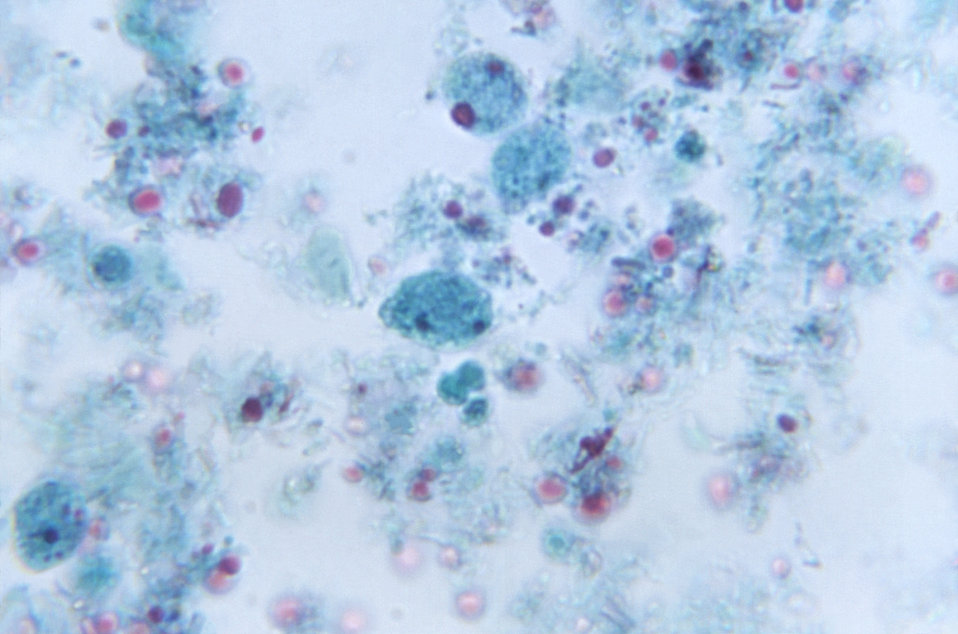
Magnified 1150X, this trichrome-stained photomicrograph revealed the presence of a parasitic Dientamoeba fragilis trophozoite.